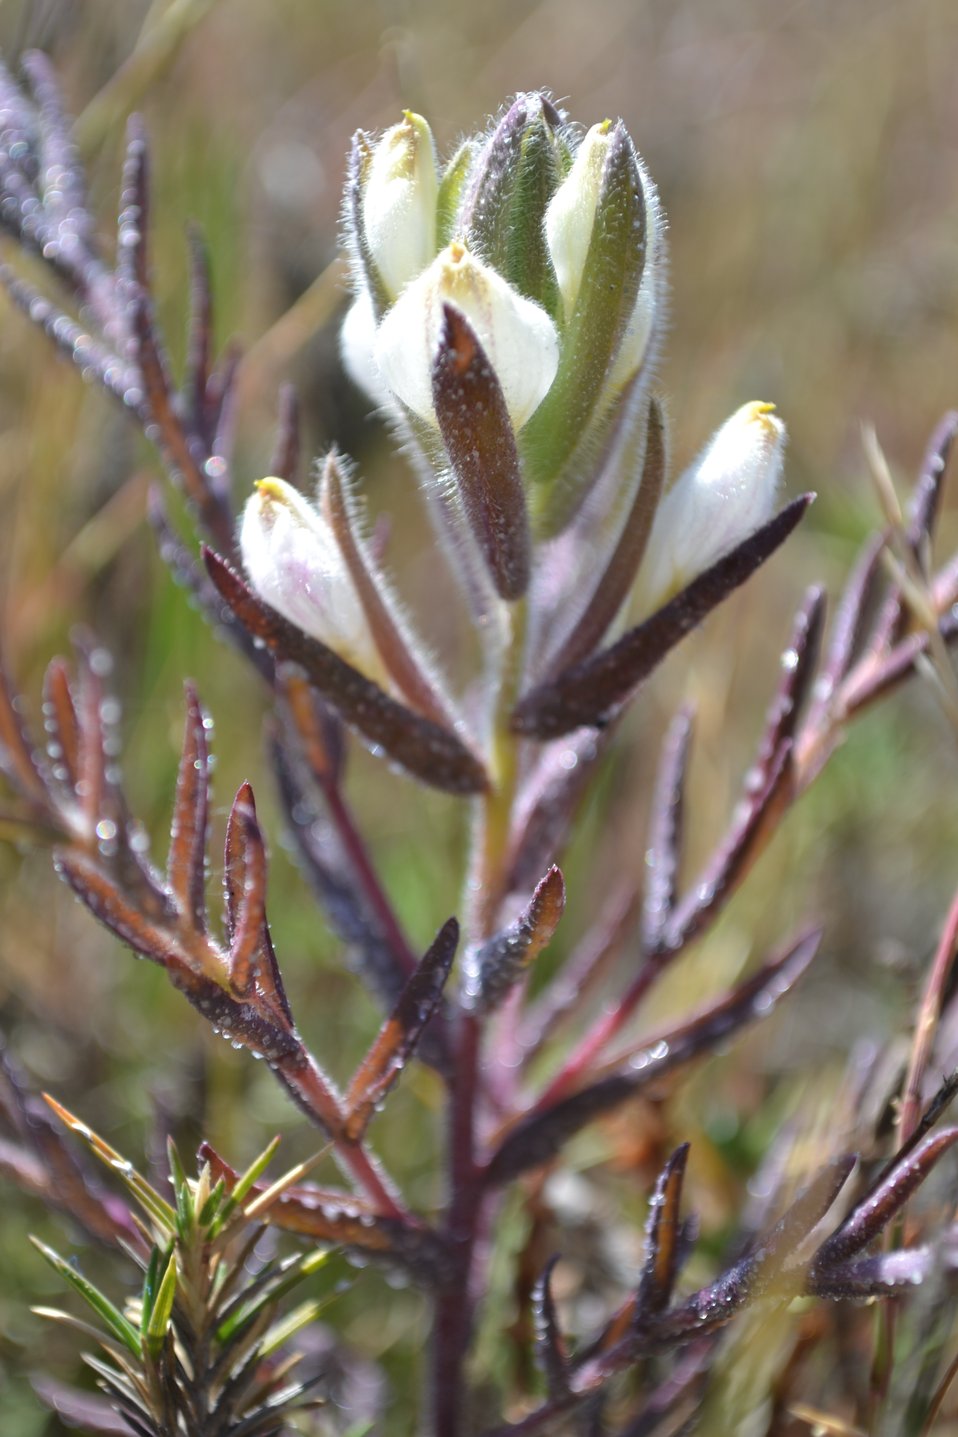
Federally endangered Salt Marsh Birds Beak (Cordylanthus maritimus maritimus)